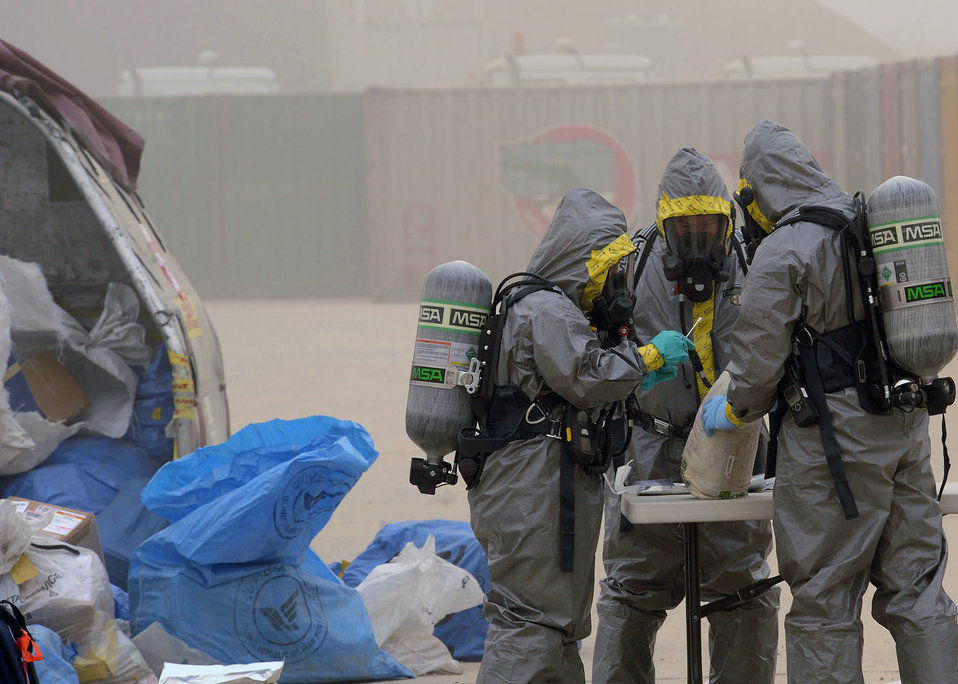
Inspecting the mail

Airmen with the 447th Expeditionary Civil Engineer Squadron's emergency management flight conduct a biological test to ensure random packages are not contaminated recently at Camp Stryker, Iraq. The Airmen make their way downrange in teams of three where the mail is stored and they then run tests on the packages for radiological, chemical and biological material.